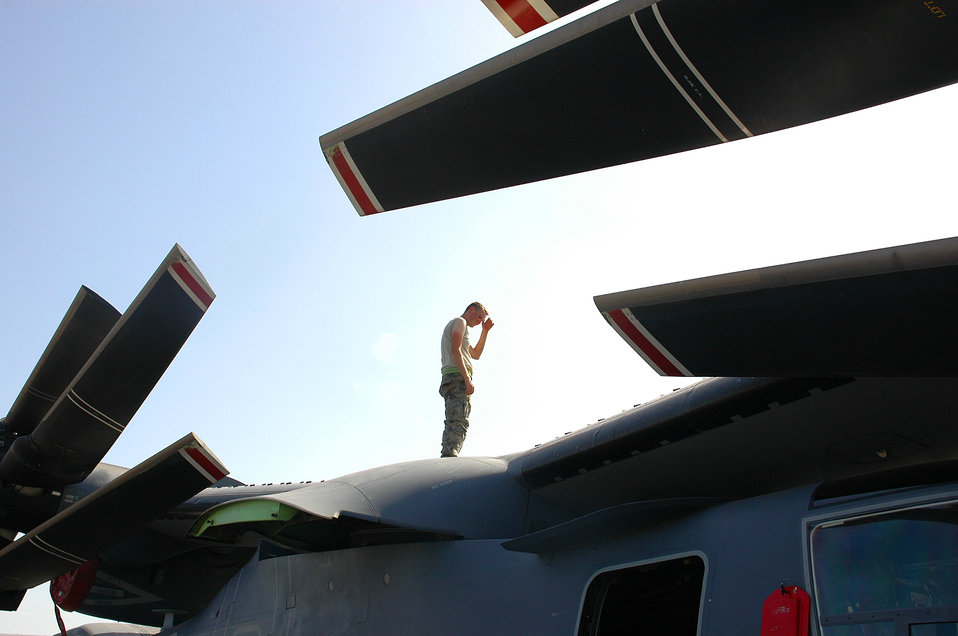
Ospreys deploy to Africa

An Airman from the 1st Special Operations Helicopter Maintenance Squadron works atop a CV-22 Osprey under the hot African sun in Bamako, Mali. Four CV-22s were operationally deployed for the first time to support Flintlock 09, a training exercise in the trans-Saharan area of Africa.